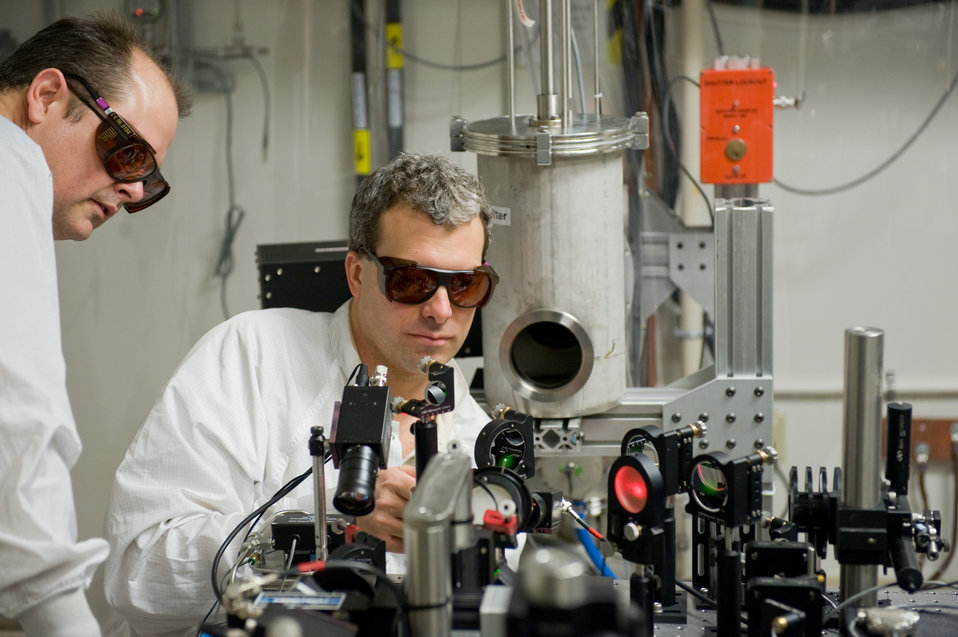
FREE ELECTRON LASERS LAB AT THOMAS JEFFERSON NATIONAL ACCELERATOR FACILITY.

Free Electron Laser (FELS) provides strong beams of laser light that can be tuned to a particular color or wavelength. Planned uses processing plastics synthetic fibers, and other materials and components of electronics, microtechnology and nanotechnology. Consumer products that may benefit from included clothing, carpeting and beverage and food packaging.